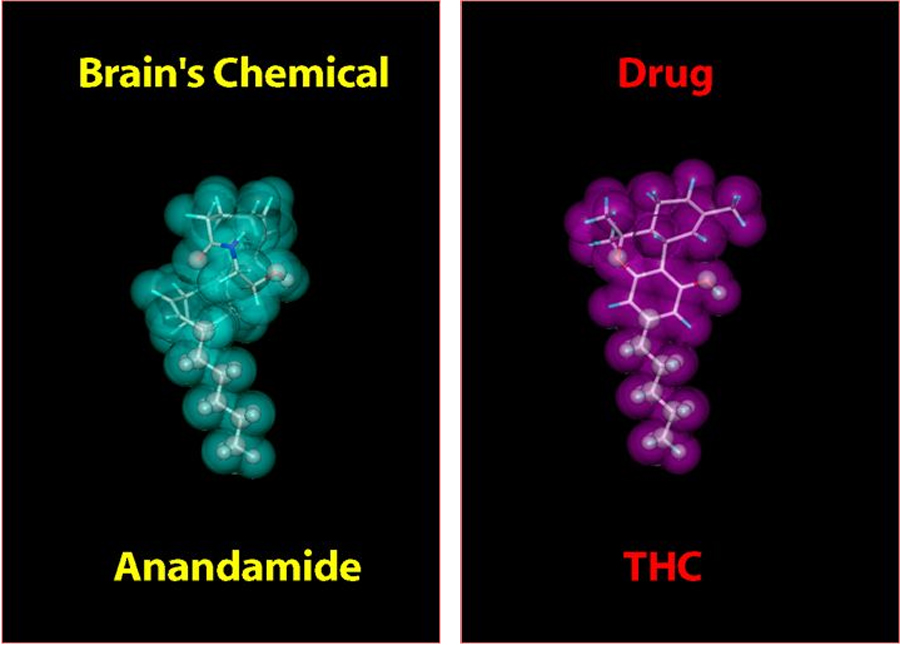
Drug Imposter - THC

THC's chemical structure is highly similar to anandamide, which is involved in several functions including regulation of pain, appetite, memory, & mood. Similarity in structure allows drugs to be recognized by neurons and to alter normal brain messages.